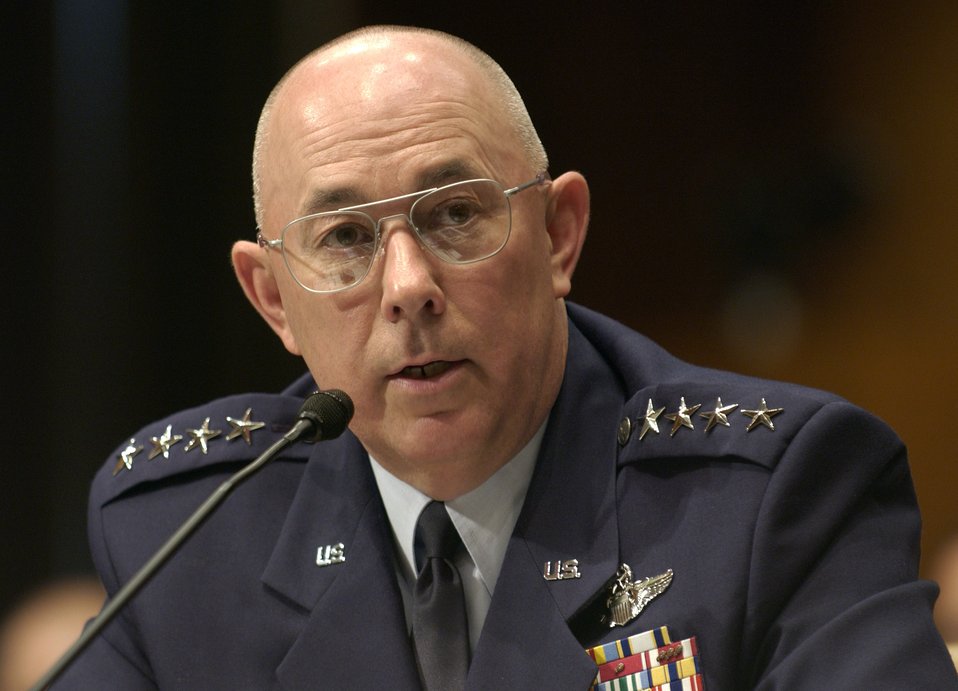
Moseley confirmation hearing held

WASHINGTON -- Gen. T. Michael Moseley testifies before the Senate Armed Services Committee during his confirmation hearing here June 29. General Moseley was nominated to be the next Air Force chief of staff.